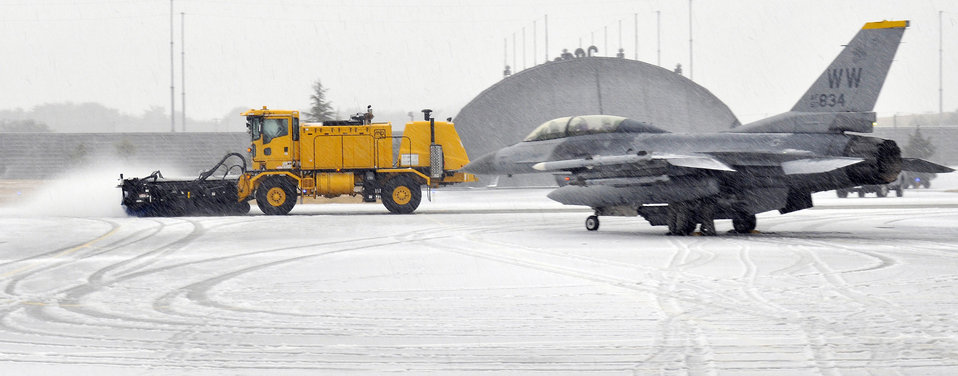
It snows in the East

Members of the 35th Civil Engineer Squadron snow removal team clear fresh snow from the taxiways at Misawa Air Base, Japan, Dec. 29, 2010, ensuring safe ground passage for the F-16 Fighting Falcon fleet. The snow removal team uses a variety of specialized equipment to sweep, blow and scrape snow from pavements.